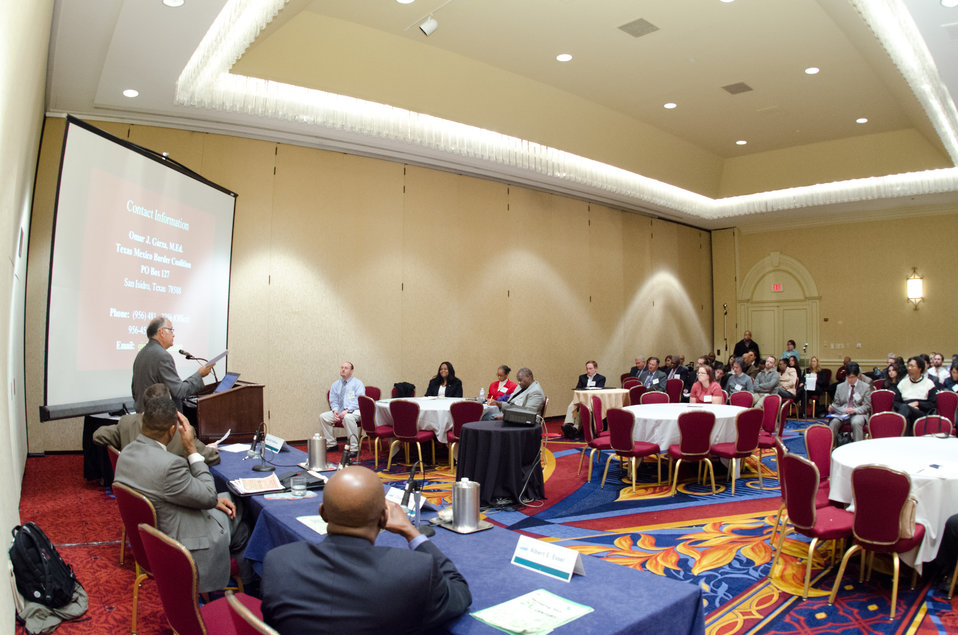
The U.S. Department of Agriculture's (USDA) 2013 Agricultural Outlook Forum is held at the Crystal Gateway Marriott in Arlington, VA on Feb. 22, 2013. This forum is an annual event that brings together producers, policymakers, business, government, and industry leaders to meet, exchange ideas, and discuss timely issues in the forefront of America's agriculture.